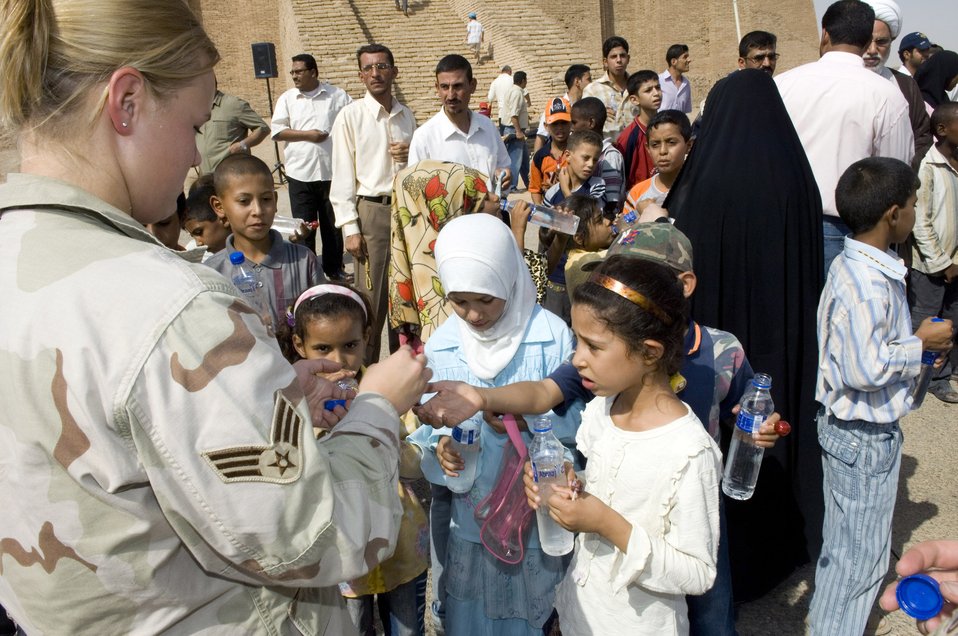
Americans, Iraqis interact at historical monument

Senior Airman Ashley-Louise Jacobsen passes out candy to young Iraqi children during a visit by 80 Iraqi nationals to the historical Ziggurat Aug. 21 located on Ali Base, Iraq. The Ali First Four Council sponsored the visit. This is the first time in more than 10 years that Iraqi civilians have been allowed to step on the grounds of the historical site, which was built in the ancient city of Ur and includes the house of the biblical prophet Abraham. Airman Jacobsen is a member of the 407th Expeditionary Logistics Readiness Squadron at Ali Base.